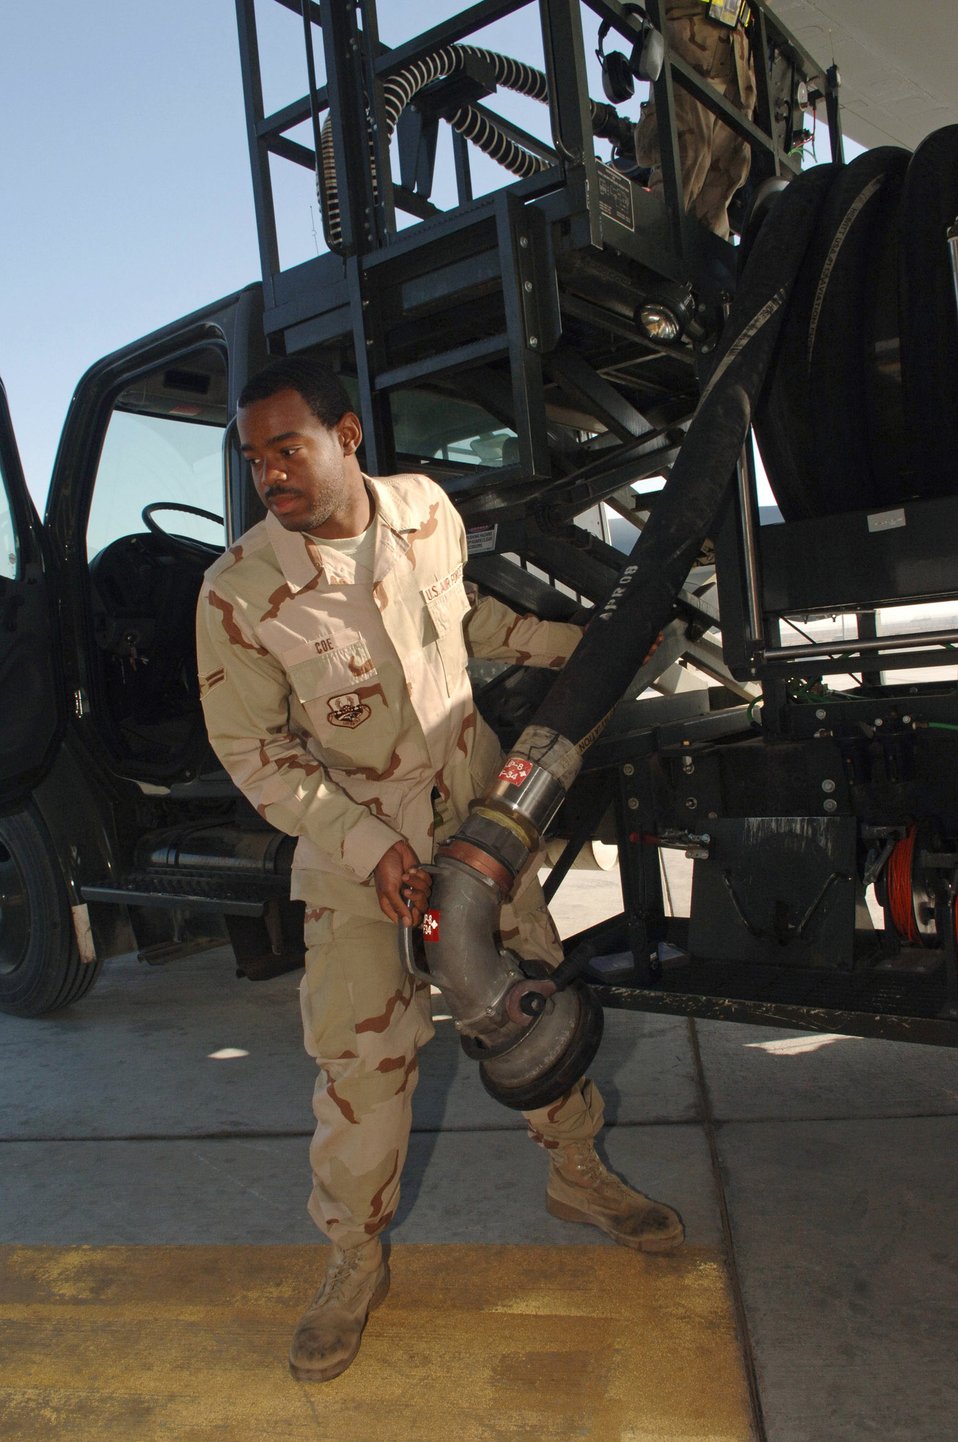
Moody AFB Airman breaks AF refueling record

Airman 1st Class Zechariah Coe extends a fuel hose from an R12 Hydrant Servicing Vehicle to an underground fuel storage tank Feb. 25 in Southwest Asia. Airman Coe took on every refueling opportunity he could to pump the more than 3,573,989 gallons of fuel breaking the previous record for fueled pumped in one month. Airman Coe is a fuels distribution operator with the 380th Expeditionary Logistics Readiness Squadron.